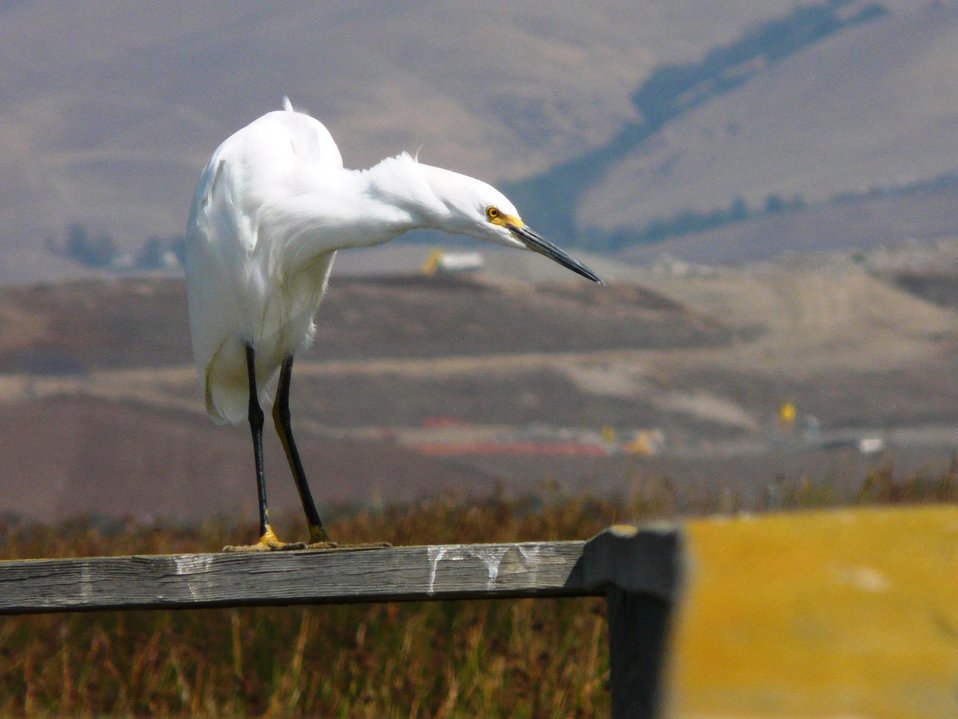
Snowy Egret hunts while perched on a fence at Don Edwards National Wildlife Refuge. Did you know that Snowy Egrets use their yellow feet as lures in the water to attract prey?